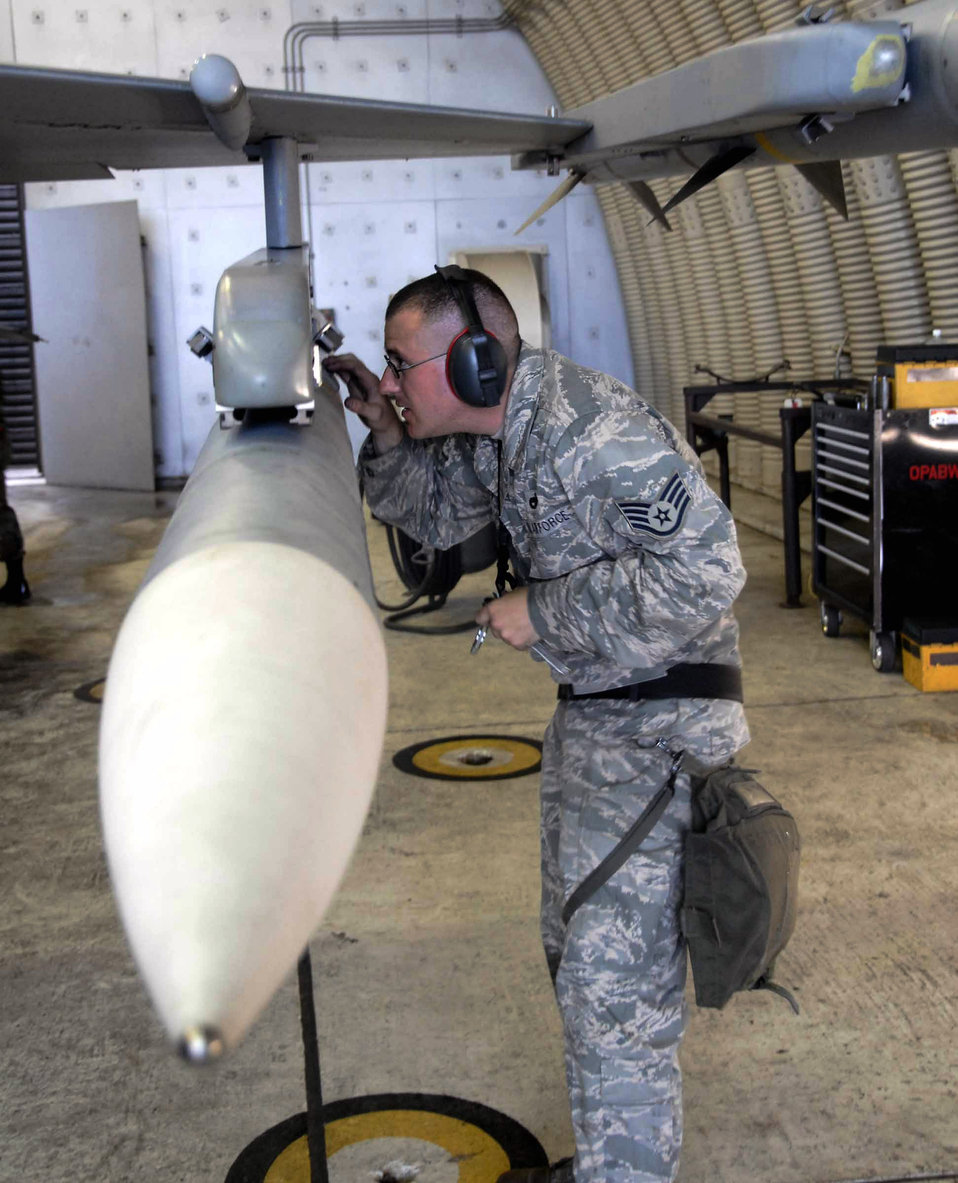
Osan exercise tests Airmen

Staff Sgt. Andrew Stover inspects the AIM-120 connections on an F-16 Fighting Falcon during a base-wide exercise July 21 at Osan Air Base, South Korea. Exercise scenarios test the Osan AB Airmen's ability to defend the base and conduct daily operations in a combat environment. Sergeant Stover is a 51st Aircraft Maintenance Squadron weapons loader.